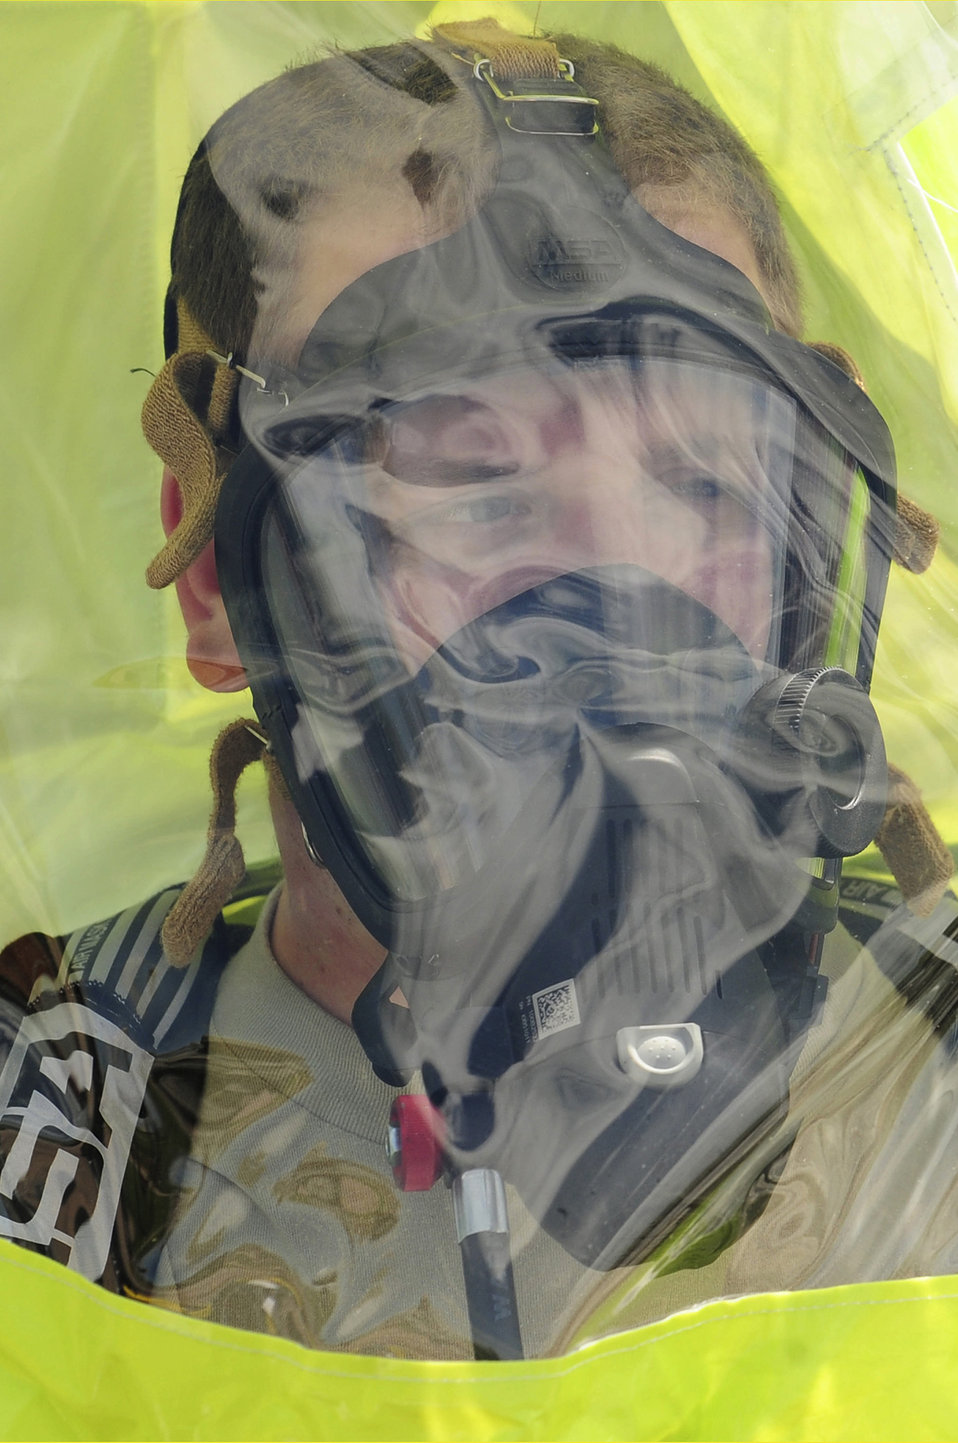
Ellsworth Airmen ready for any emergency

Airman 1st Class David Jack, 28th Civil Engineer Squadron emergency management journeyman, is fitted in a level A suit before participating in an emergency management exercise, June 3, 2010, at Ellsworth Air Force Base, S.D. In real world incidents, level A suits are donned when emergency responders are in contact with an unknown variable in a chemical, biological, radiological or nuclear environment.